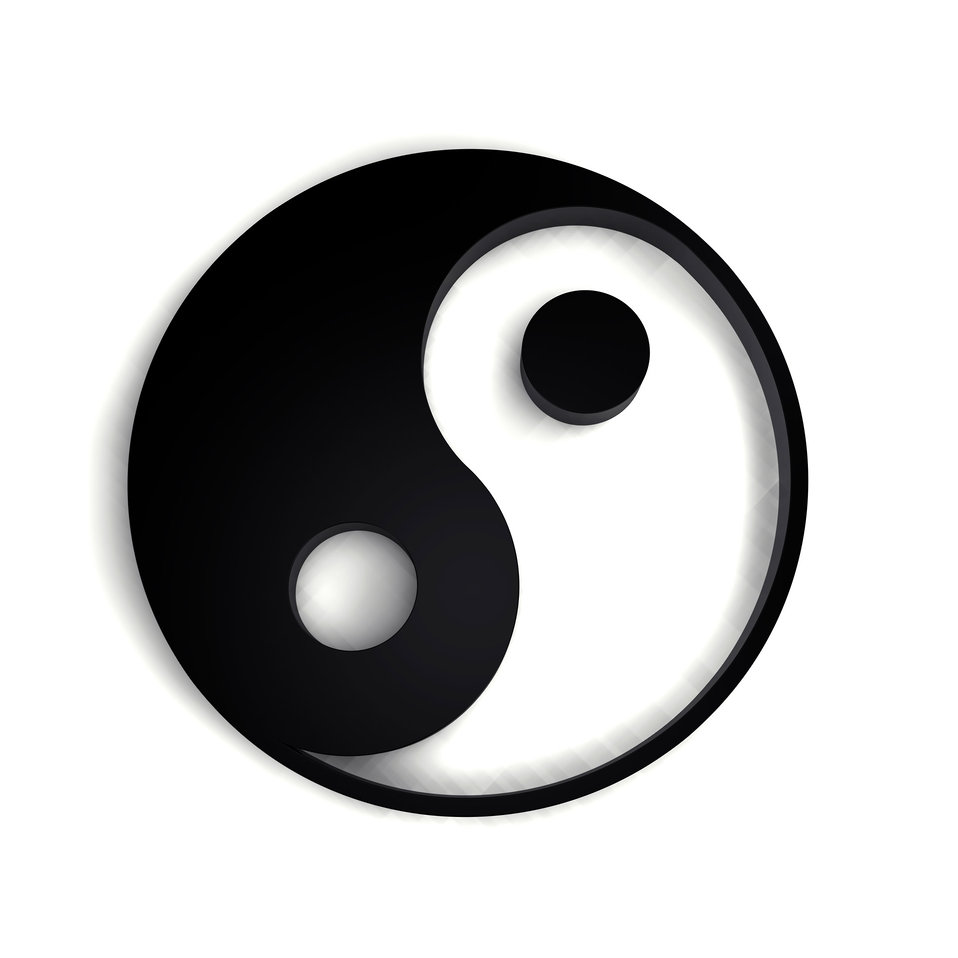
Yin yang in 3d.